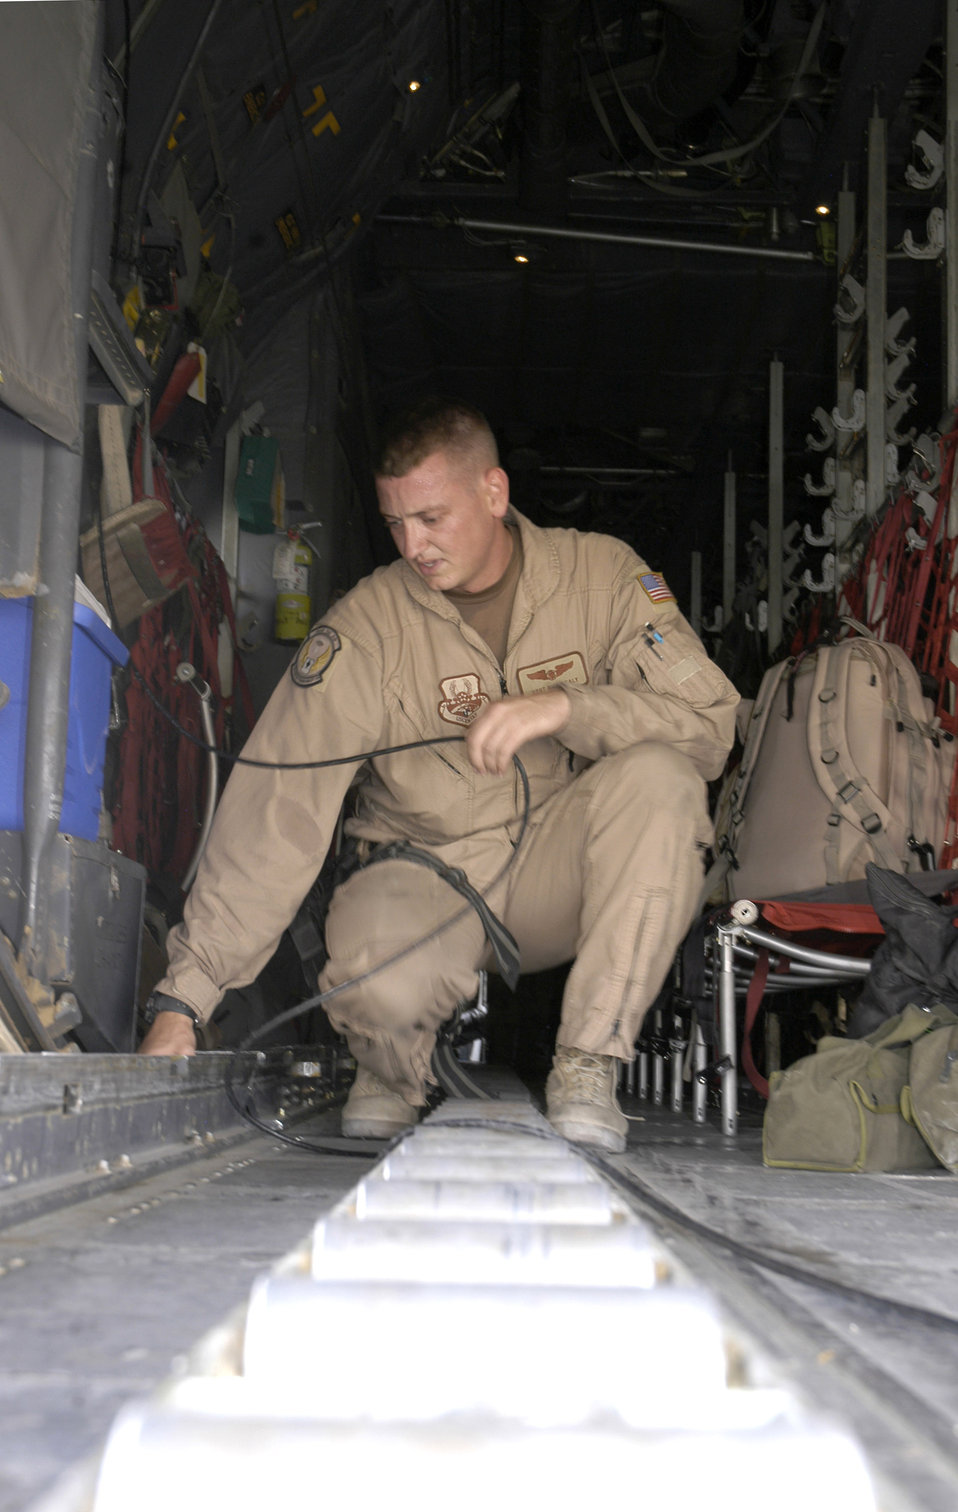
Airlift support

Staff Sgt. Nick Sealy configures a C-130 Hercules in preparation for passengers and cargo at a forward operating base in Southwest Asia Aug. 23. Sergeant Sealy is a loadmaster with the 738th Expeditionary Airlift Squadron, which is part of the 386th Air Expeditionary Wing. The wing is the primary aerial hub for Operation Iraqi Freedom and provides airlift support for Operation Enduring Freedom and the Horn of Africa.